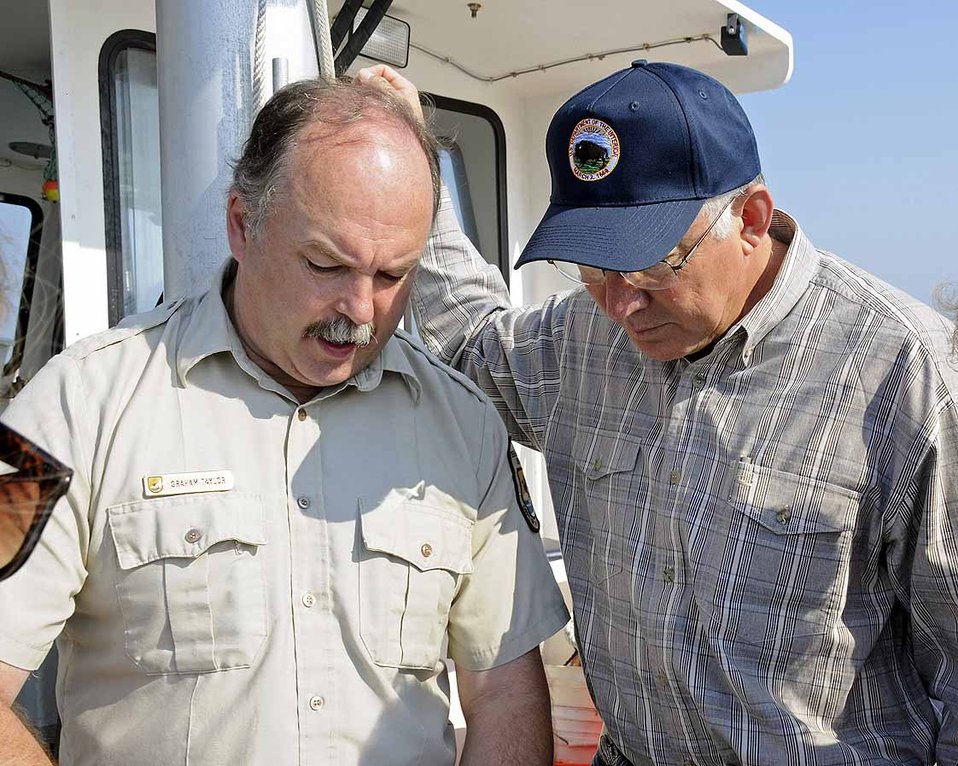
Secretary Salazar visit to Great Bay

Secretary of the Interior Ken Salazar (right) talks with Graham Taylor, Manager of the Great Bay National Wildlife Refuge (and Parker River NWR) during a boat tour of Great Bay on August 19, 2011.